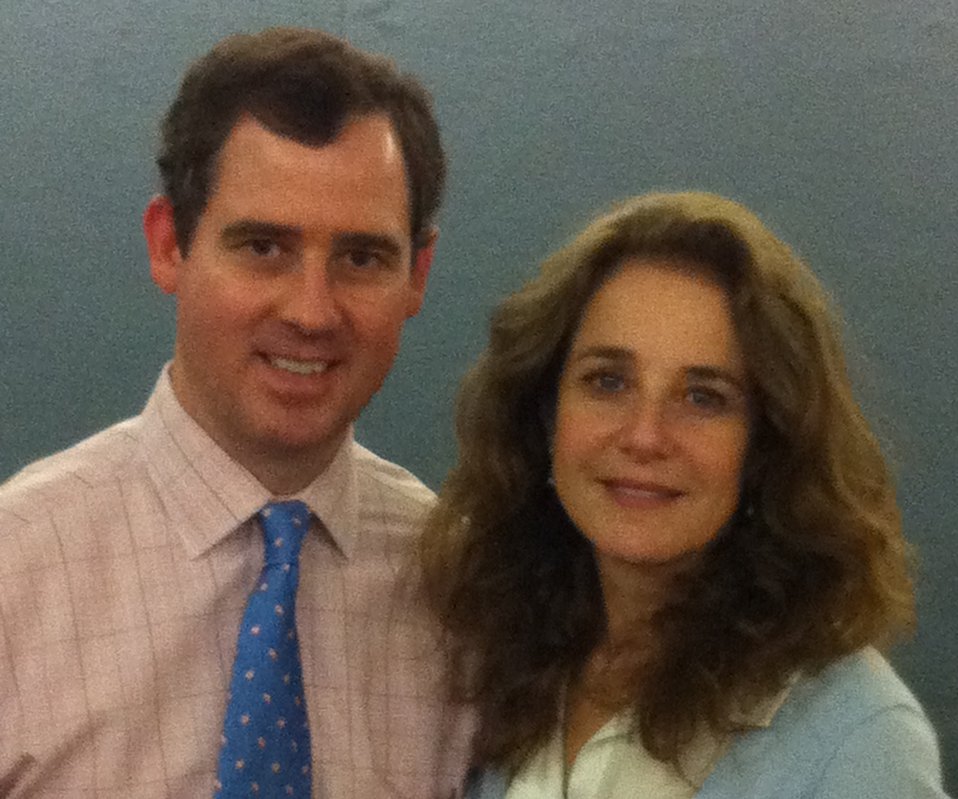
Christo and Winger

Dr. Paul Christo (pain medicine specialist at Johns Hopkins Medicine) and Actress Debra Winger at the August 5, 2011 performance of NIDA's Addiction Performance Project, NIH Campus